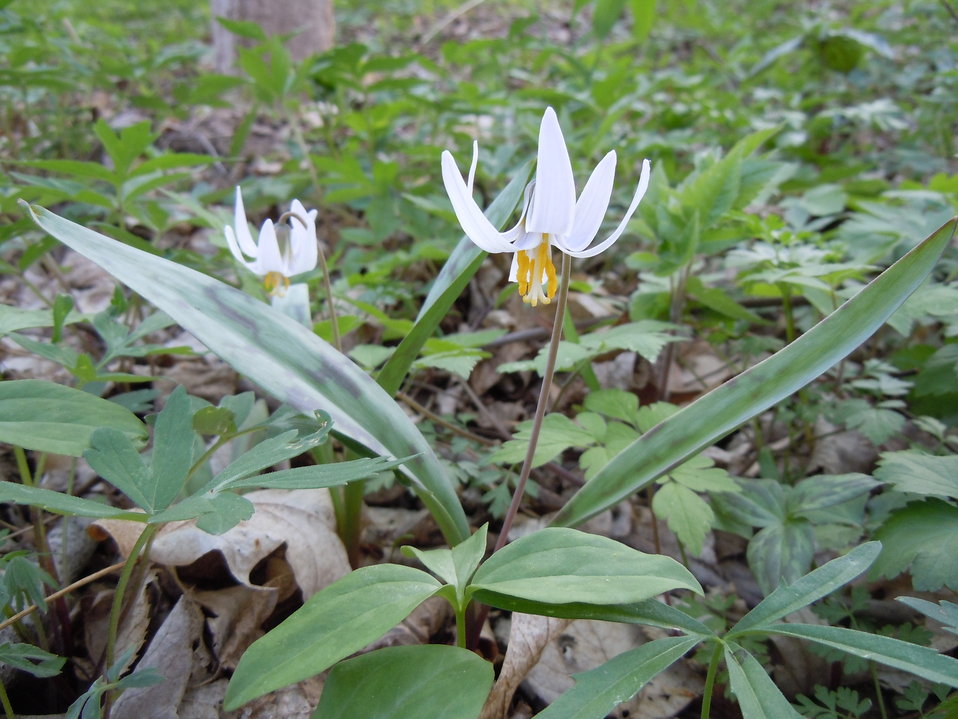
White Trout Lily